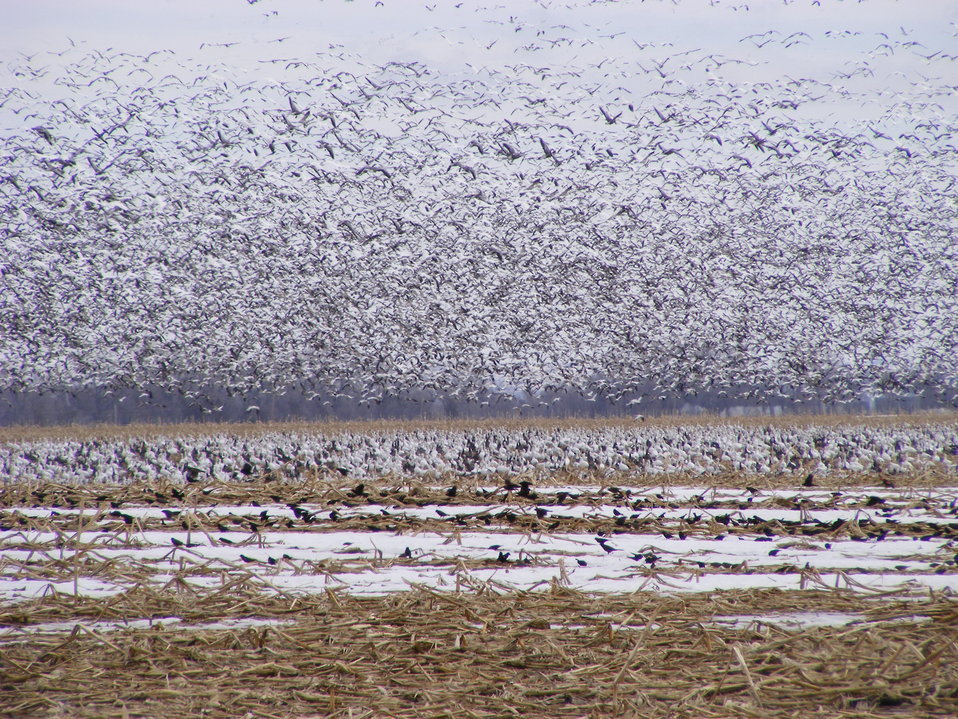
Too Many to Count

A huge flock of snow and white-fronted geese rise from a cornfield in northeast South Dakota in April of 2013. Some years we can see mass flocks like these for a few days before they continue migrating north.